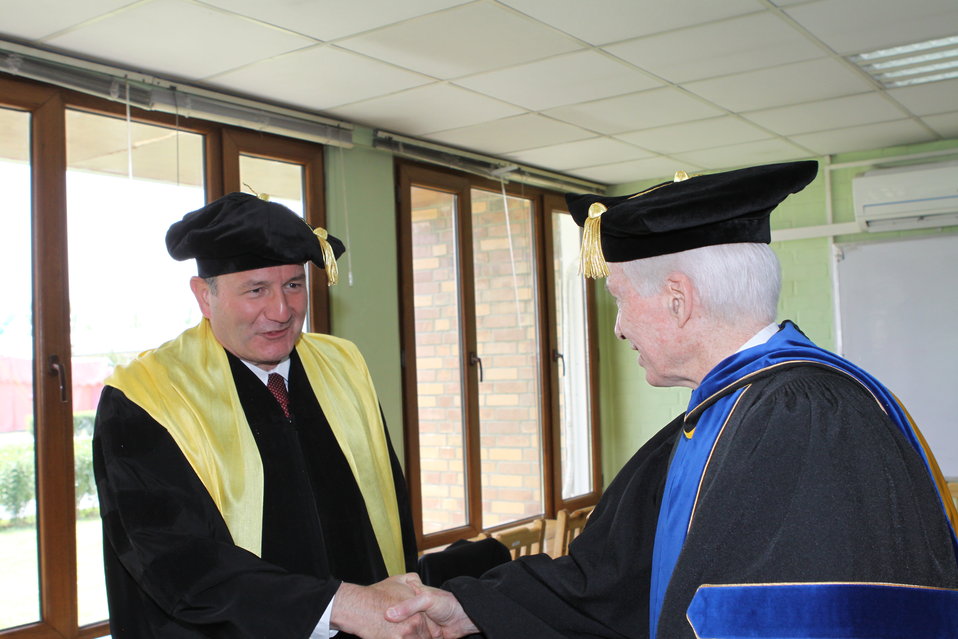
100526 AUAF Graduation 056